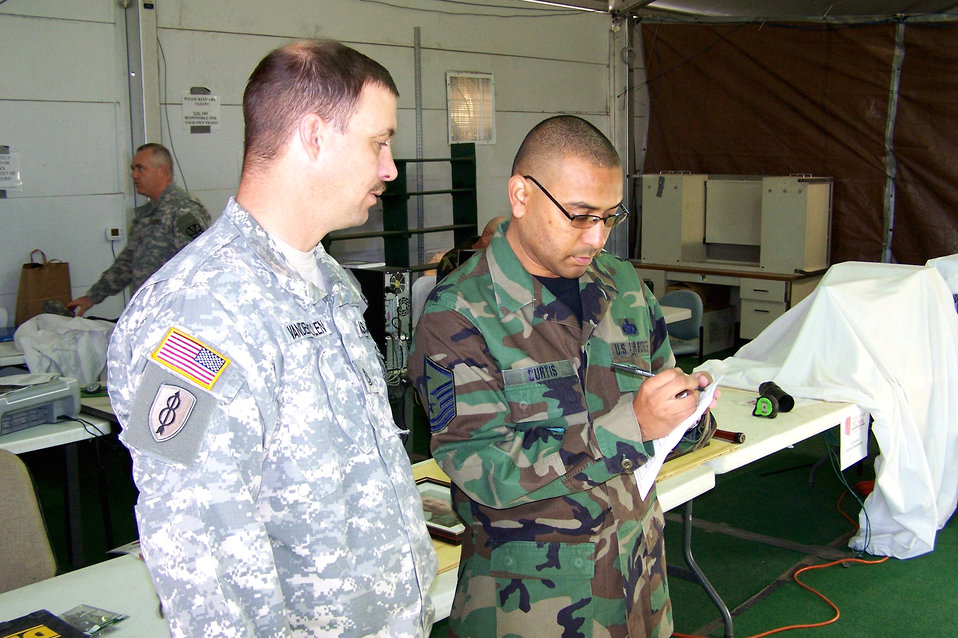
Serving through the season: Master Sgt. Greg Curtis

Master Sgt. Greg Curtis makes a note while talking with Sgt. 1st Class Dan Vandermolen. Sergeant Curtis, a member of the Ohio Air National Guard, is currently deployed with Operation Jump Start in Yuma, Ariz.